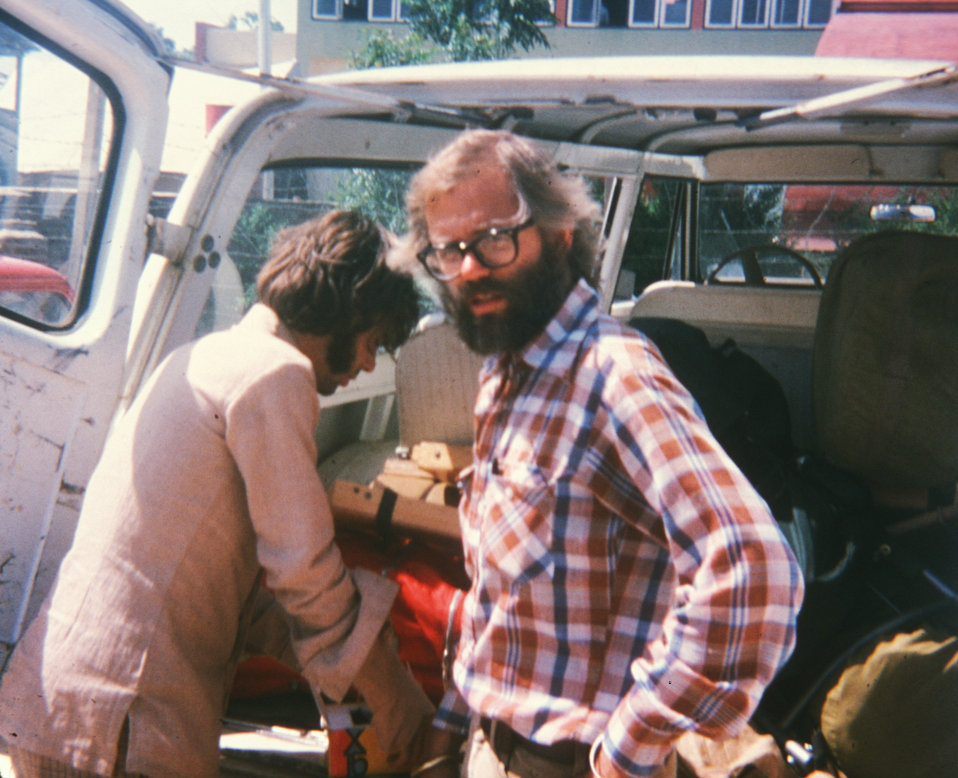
Here Dr. Edward Brink is loading a truck prior to going "into the bush" in Nepal during the smallpox eradication efforts.